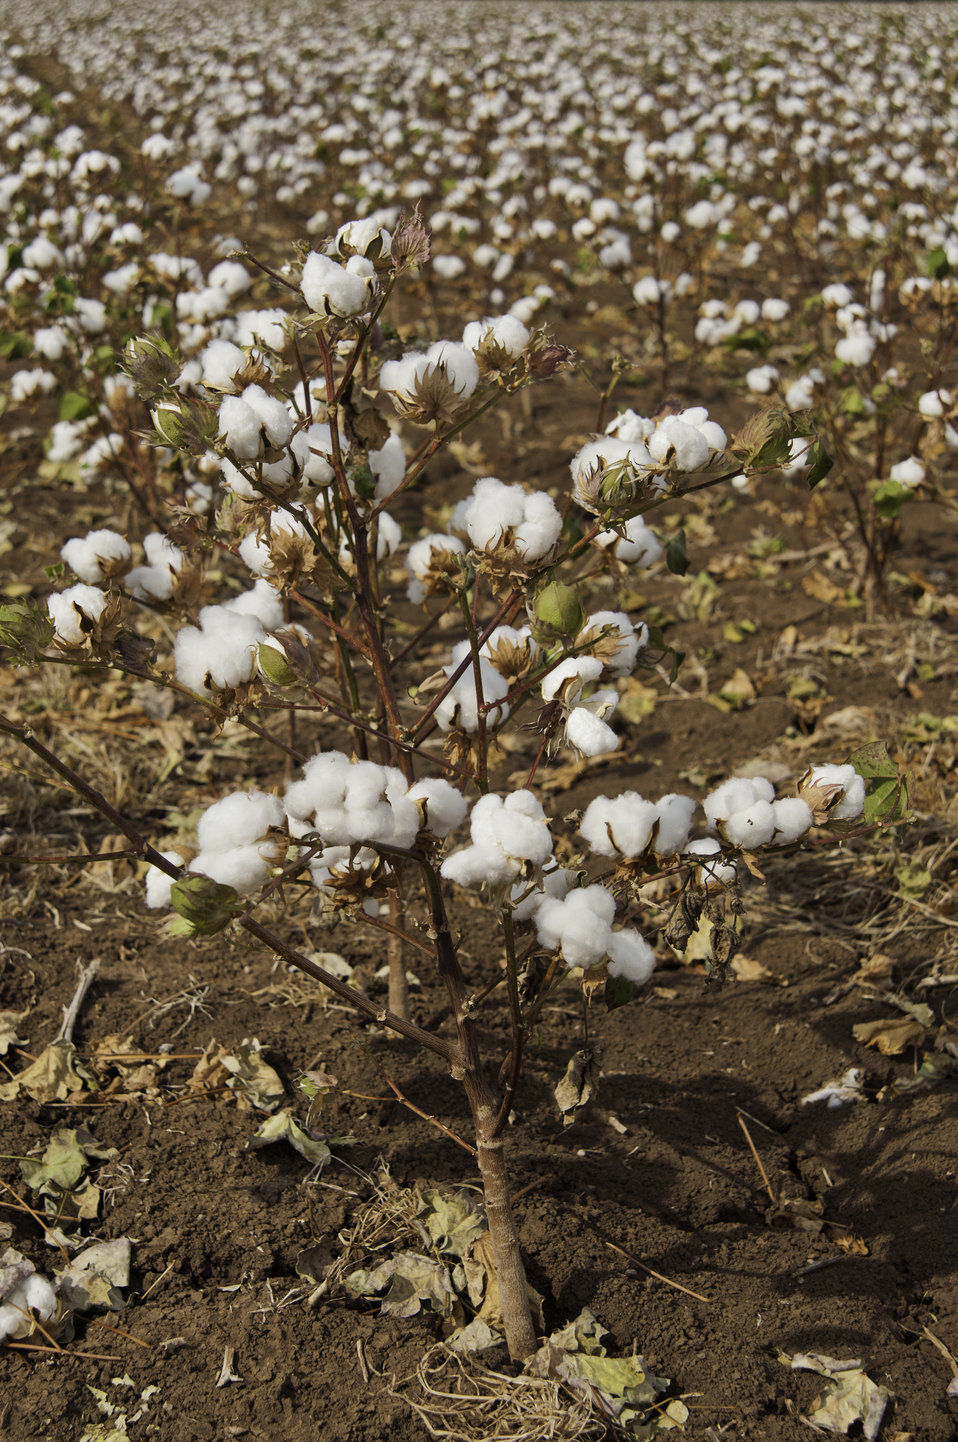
Dry Land cotton grows on a farm in Navasota, TX on Aug. 23, 2013.